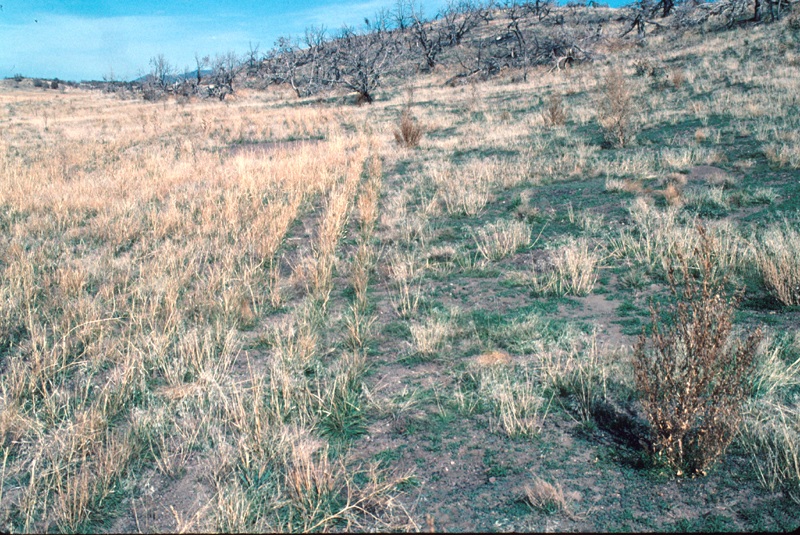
Four Rivers Dry Creek Range Restoration Project Lower Snake River District